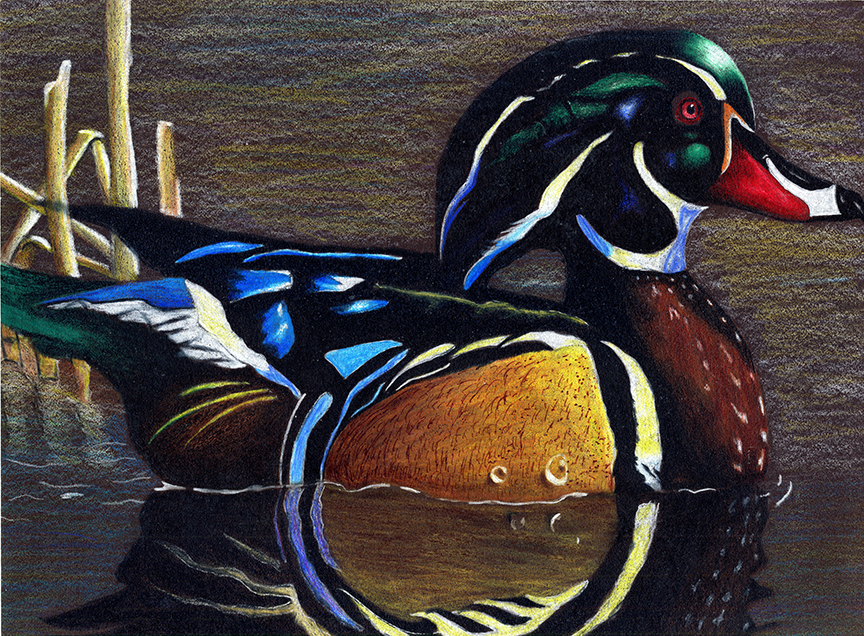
JRDuck2013OK

2013 Junior Duck Stamp Best of Show-Oklahoma